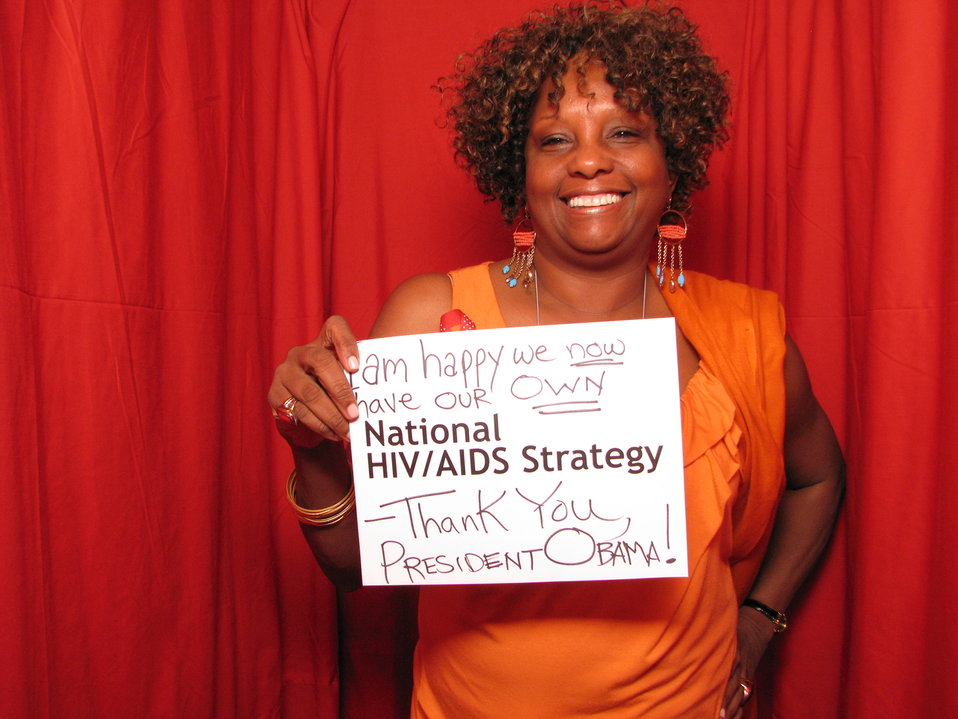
I am happy we now have our OWN National HIV/AIDS Strategy. -Thank you, President Obama!

From the AIDS.gov photo booth at the U.S. Conference on AIDS, September 2010 (Orlando, FL).